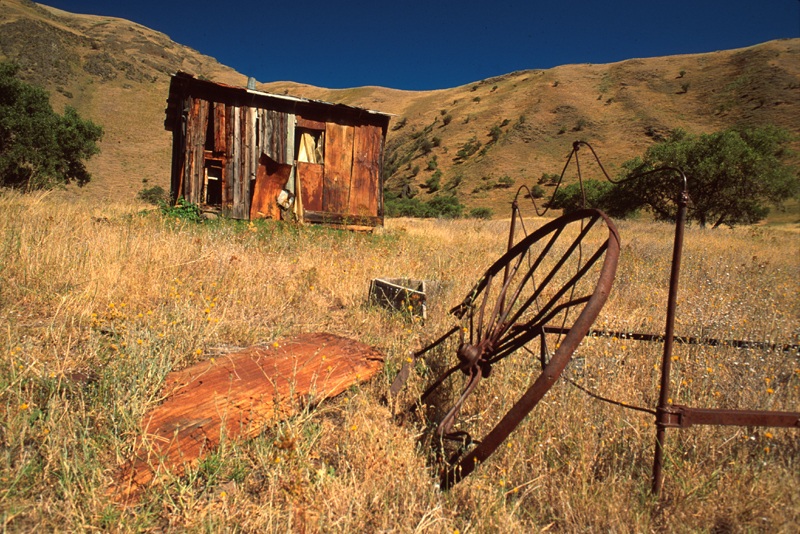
Upper Columbia-Salmon Clearwater District UCSC Shack Lower Salmon River